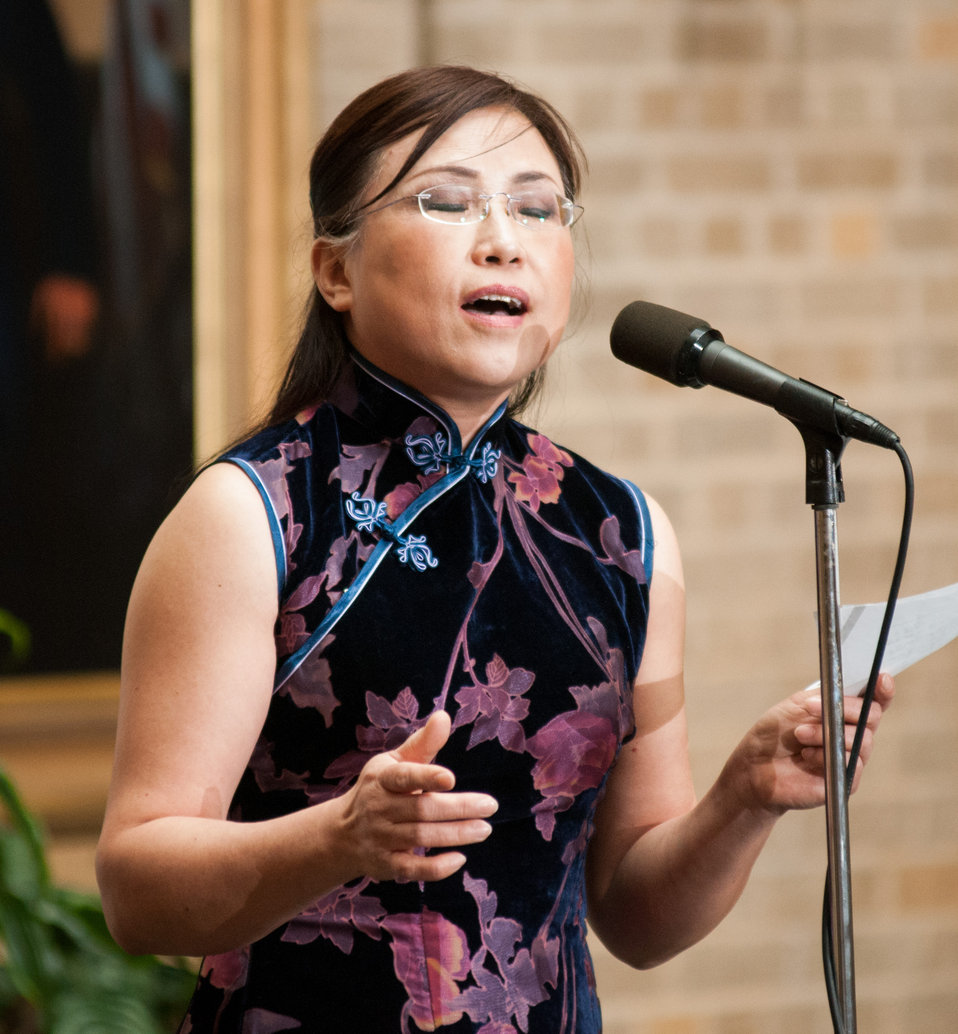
U.S. Department of Agriculture (USDA) Food Safety and Inspection Service’s Tricia Zhang sings “Jasmin Flower” during the U.S. Department of Agriculture (USDA) Asian Pacific American Heritage Month Observance, at the USDA headquarters, Whitten Building patio, in Washington, D.C., on Thursday, May 23, 2013. This year’s theme is “Building leadership; Embracing the Cultural Values and Inclusions.”